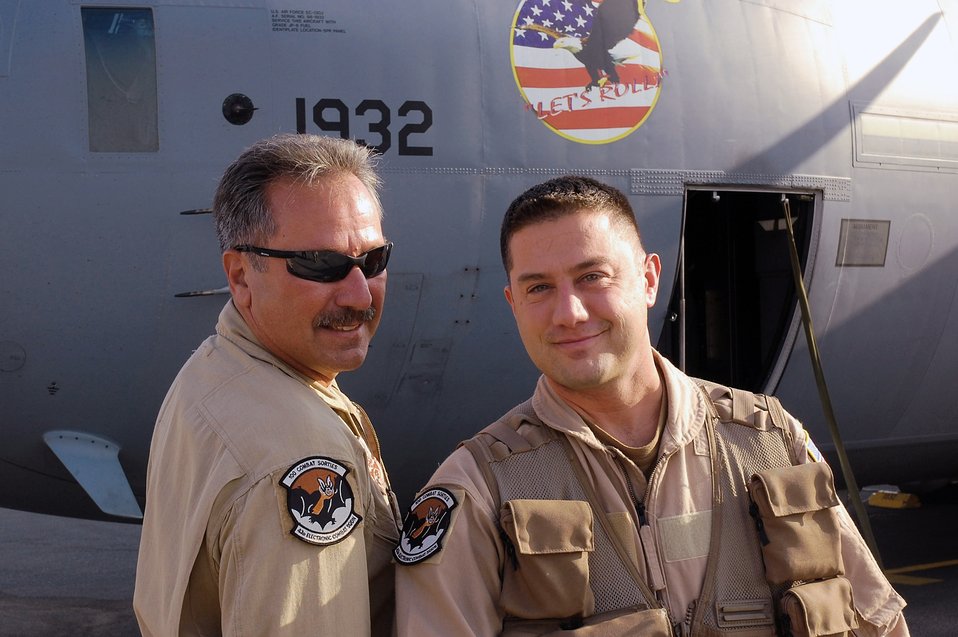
Heir apparent: Father, son deploy together

Senior Master Sgt. Michael Kovach (left) and his son, Master Sgt. Shawn Kovach, compare patches after the son received a patch for flying his 100th combat mission Nov. 19 in Southwest Asia. Both Airmen are assigned to the 43rd Expeditionary Electronic Combat Squadron and are deployed from the Pennsylvania Air National Guard's 193rd Special Operations Wing from Middletown, Penn.